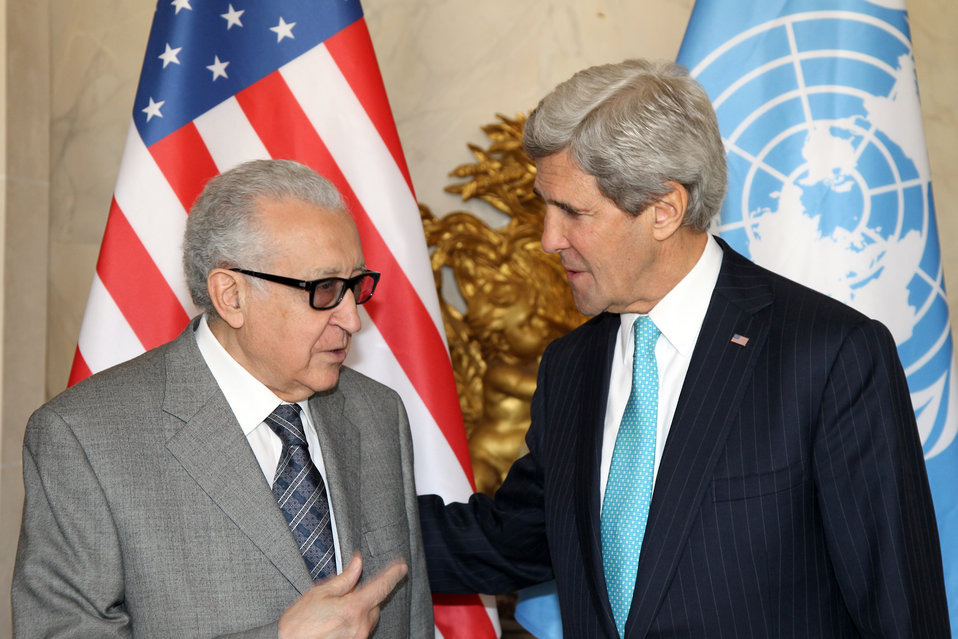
Secretary Kerry Meets With UN Special Representative Brahimi

U.S. Secretary of State John Kerry meets with UN Special Representative Lakhdar Brahimi in Paris, France, on March 5, 2014.